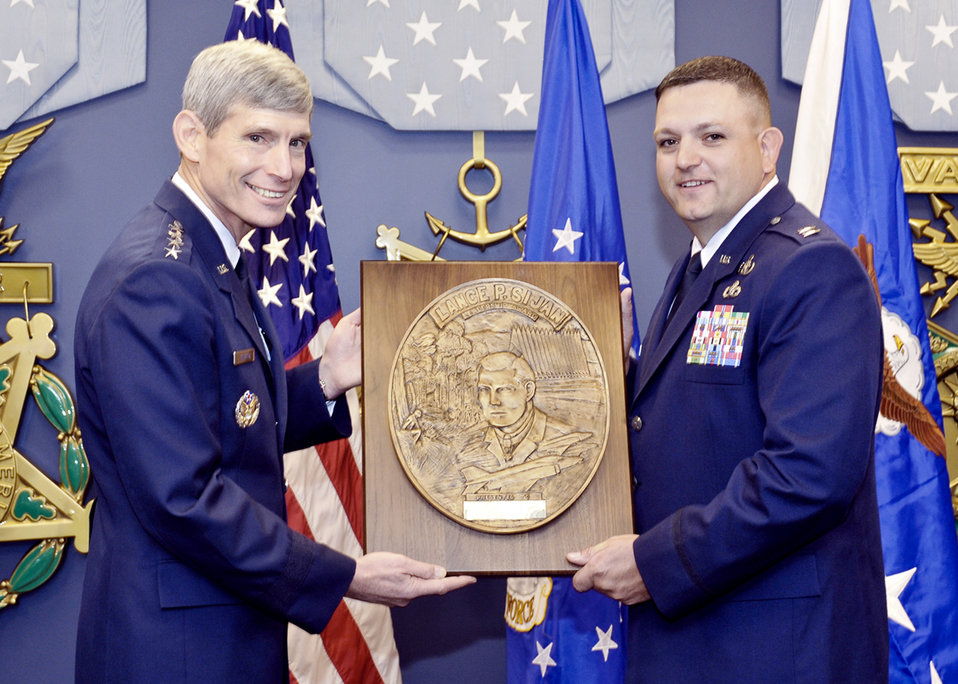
Sijan Award

Air Force Chief of Staff Gen. Norton Schwartz presents the Capt. Lance P Sijan Air Force Leadership Award to Capt. Thomas Eckel Nov. 18, 2009. The Sijan Award recognizes the accomplishments of officer and enlisted Airmen who have demonstrated the highest qualities of leadership in the performance of their duties and the conduct of their lives.